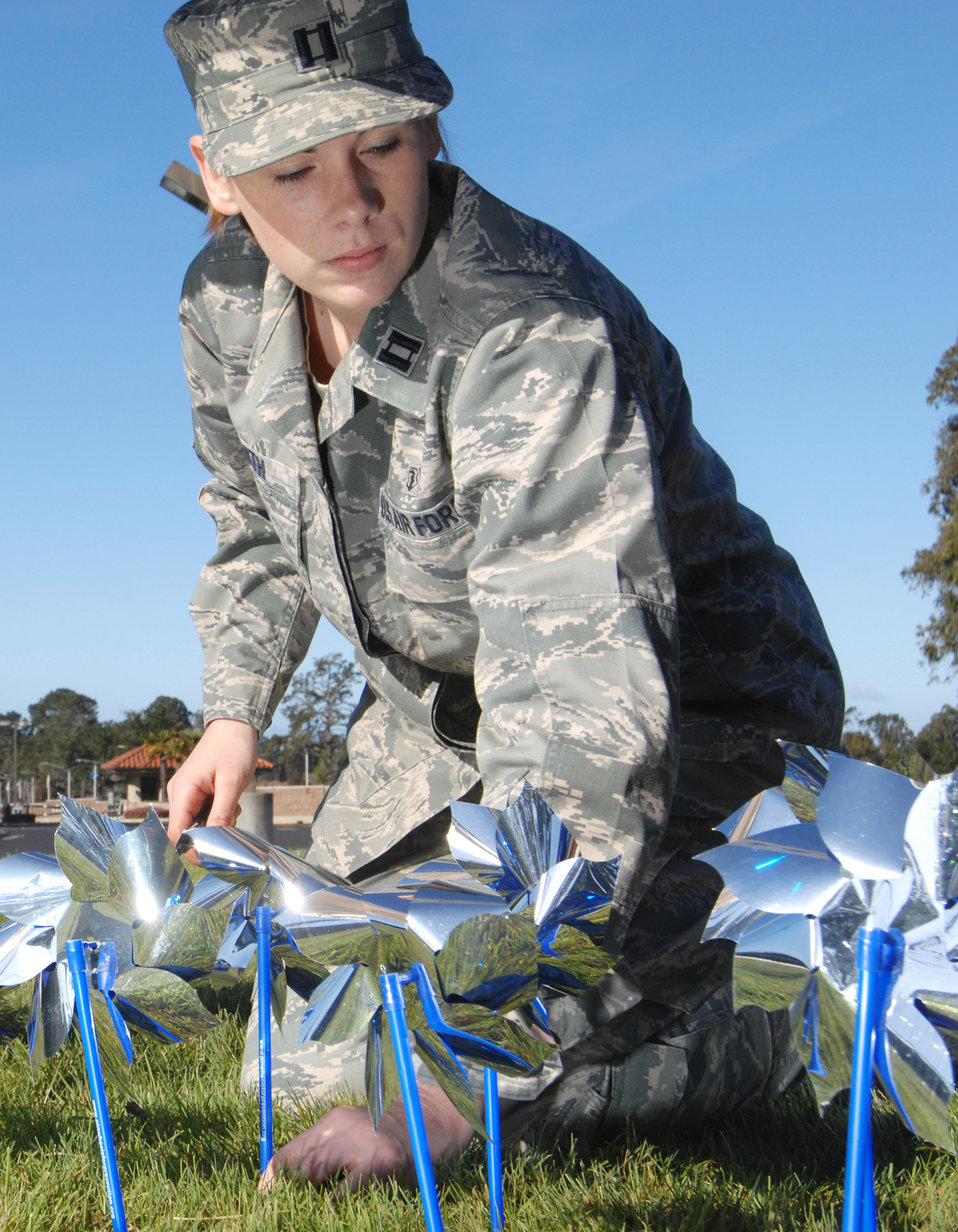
Pinwheels for change

In support of Child Abuse Prevention Month, Capt. Jodi Smith, with the 30th Medical Operations Squadron,